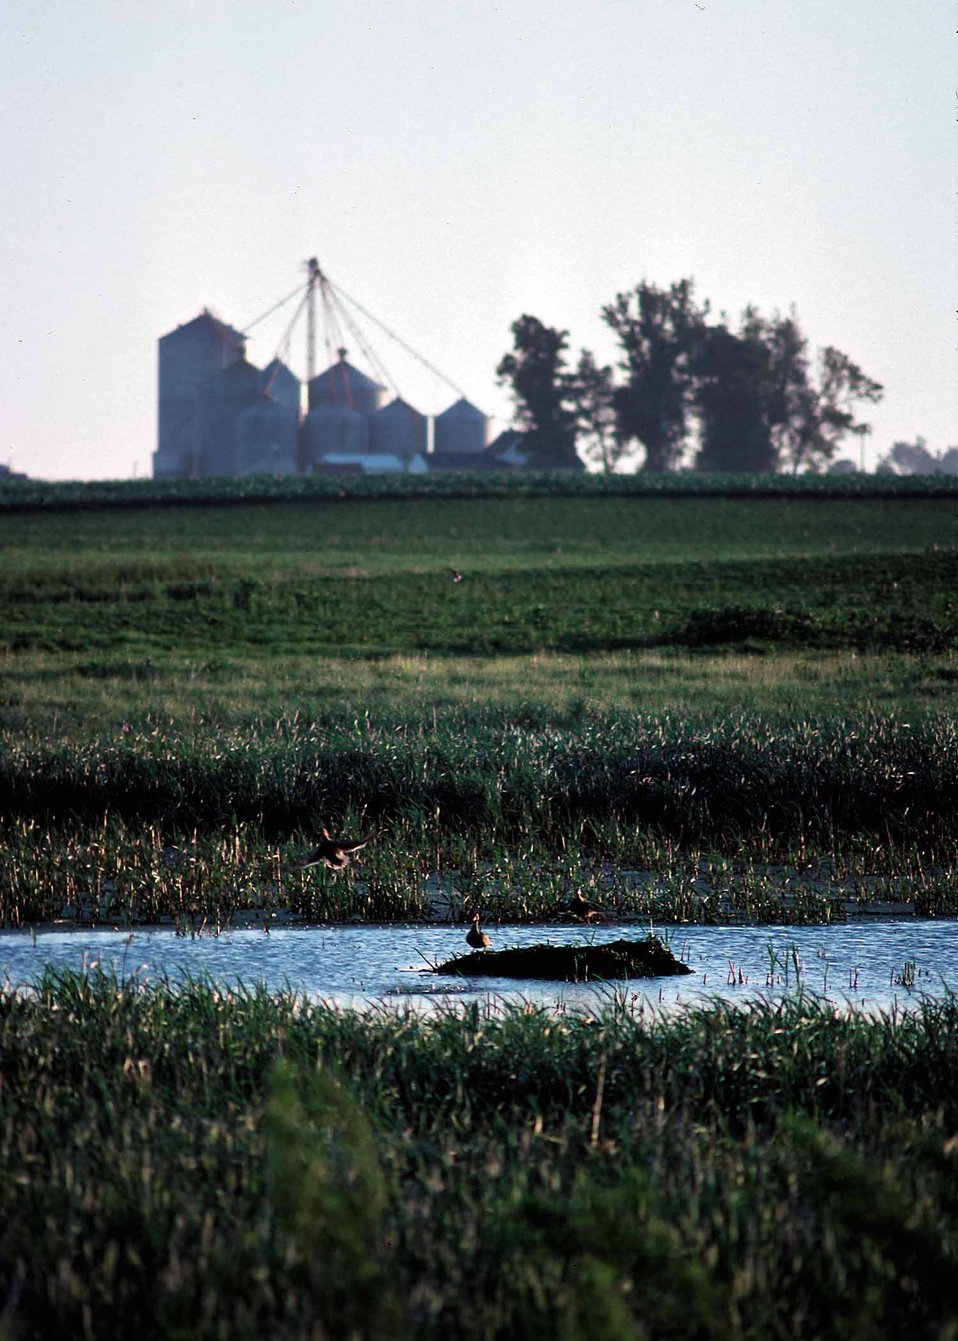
Wetland in northcentral Iowa.